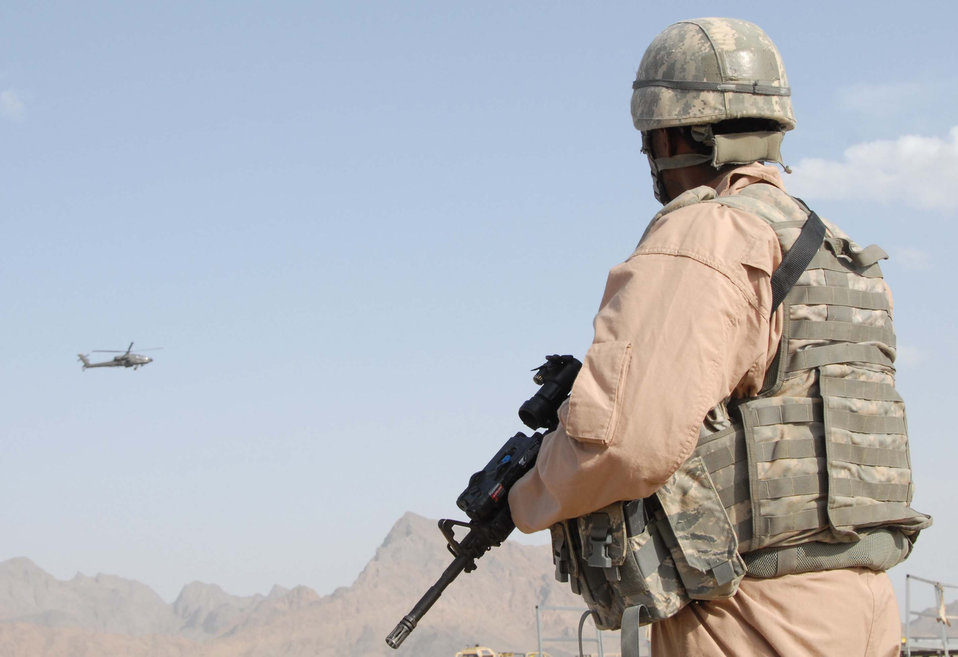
FAST defenders keep fliers safe in Afghanistan

Senior Airman Kendall Wilson looks into the desert surrounding an unsecured runway April 10, 2011, in Afghanistan. Airman Kendall is a fly away security team member who travels with aircraft and prevents unauthorized access to the flightline. Airman Wilson is assigned to the 451st Expeditionary Security Forces Squadron.